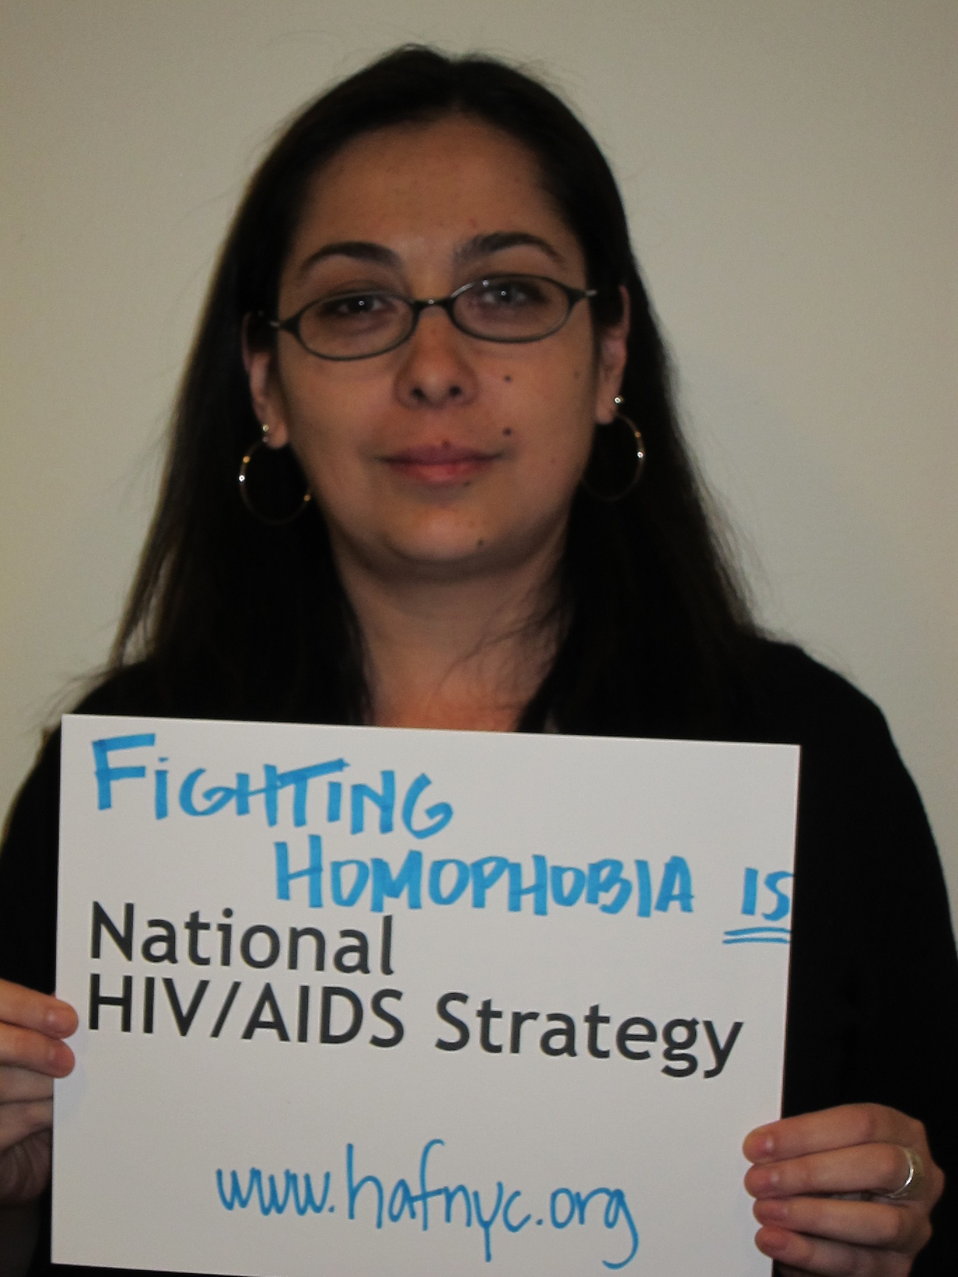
Fighting Homophobia is National HIV/AIDS Strategy www.hafnyc.org